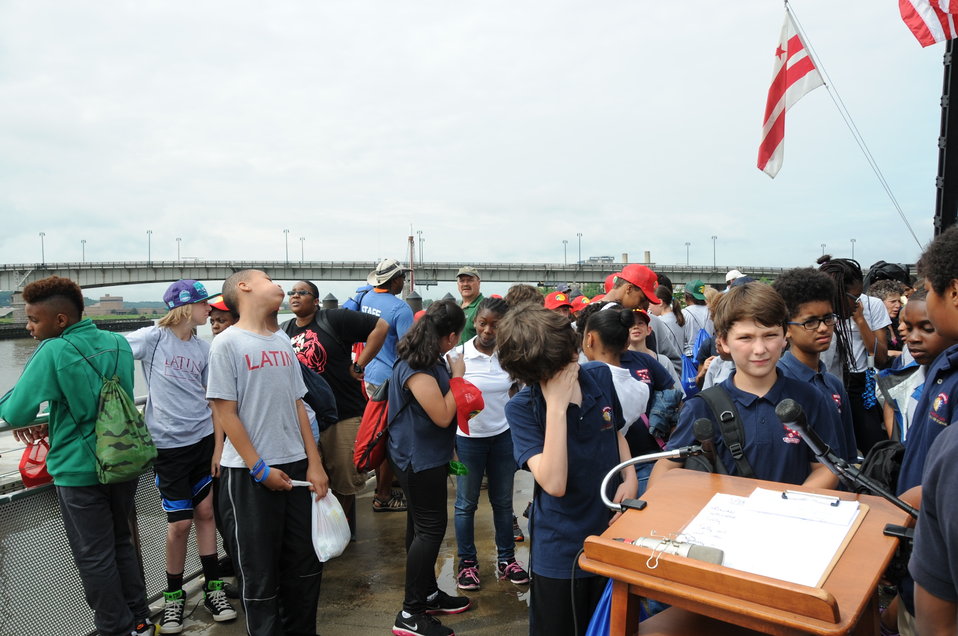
2013 National Fishing and Boating Week

Local students prepare to enjoy fishing at the annual kick-off of National Fishing and Boating Week on the Anacostia River in Washington D.C.